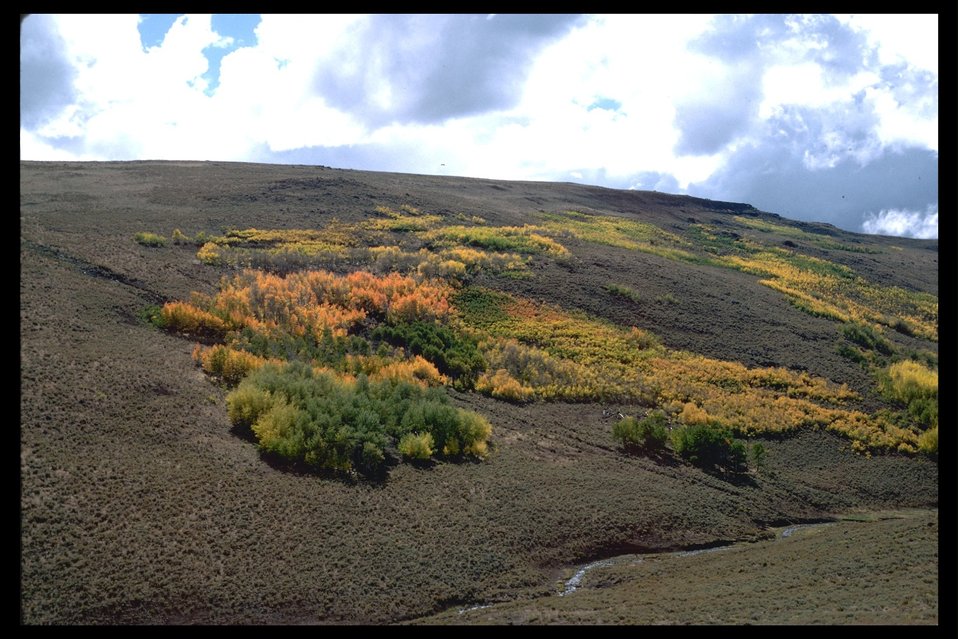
Fall colors of Aspen near the headwaters of Big Trout Creek at Disaster Peak in the Vale WSA. (3-153)